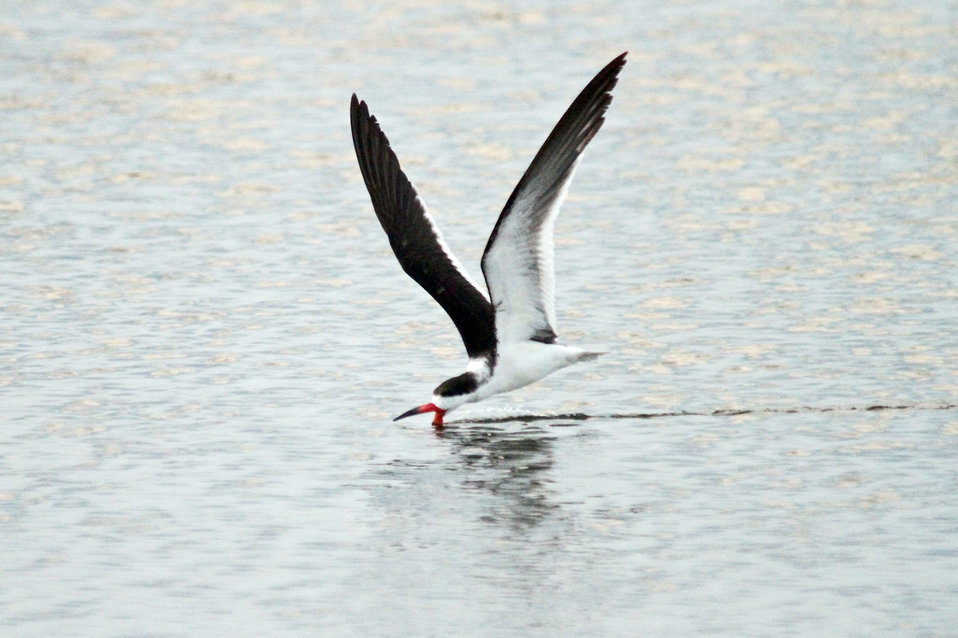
Black Skimmer on the water

Black Skimmer landing on the water at South Padre Island